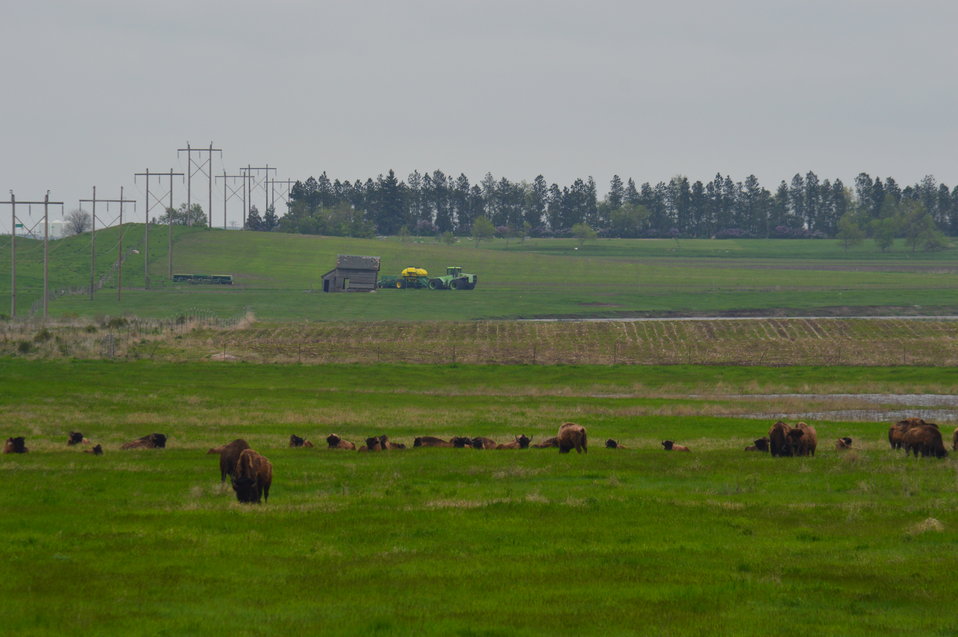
Bison

Scenery and wildlife at Lake Ilo National Wildlife Refuge in North Dakota